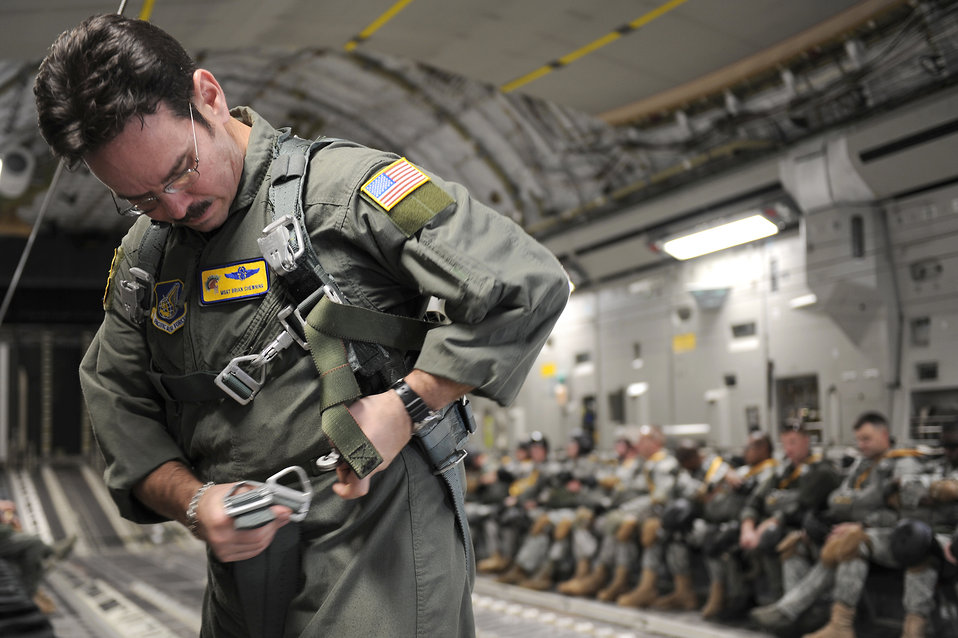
Static-line jumps over Guam

Master Sgt. Brian Chewning secures a safety harness before opening the doors for the 36th Contingency Response Group static-line jumpers Jan. 13, 2011, at Andersen Air Force Base, Guam. Sergeant Chewning is a loadmaster assigned to the 535th Airlift Squadron from Joint Base Pearl Harbor-Hickam, Hawaii.